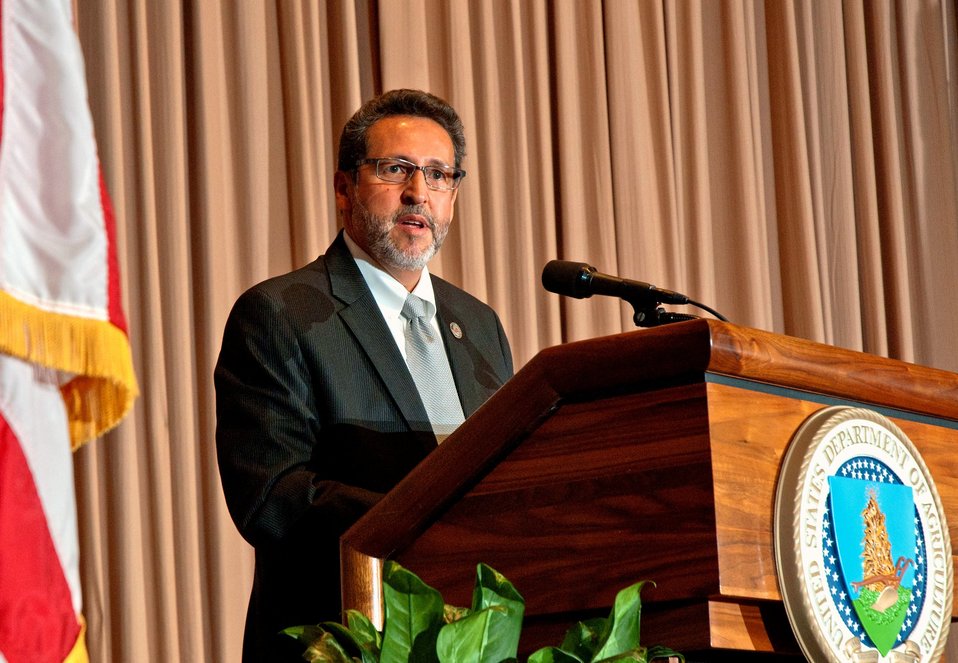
Food Safety and Inspection Service Office of Outreach, Employee Education and Training Acting Assistant Administrator Carl-Martin Ruiz gave the closing remarks for the observance of National Hispanic Heritage Month at the United States Department of Agriculture (USDA) in the Jefferson Auditorium in Washington, D.C. on Thursday, September 15, 2011.